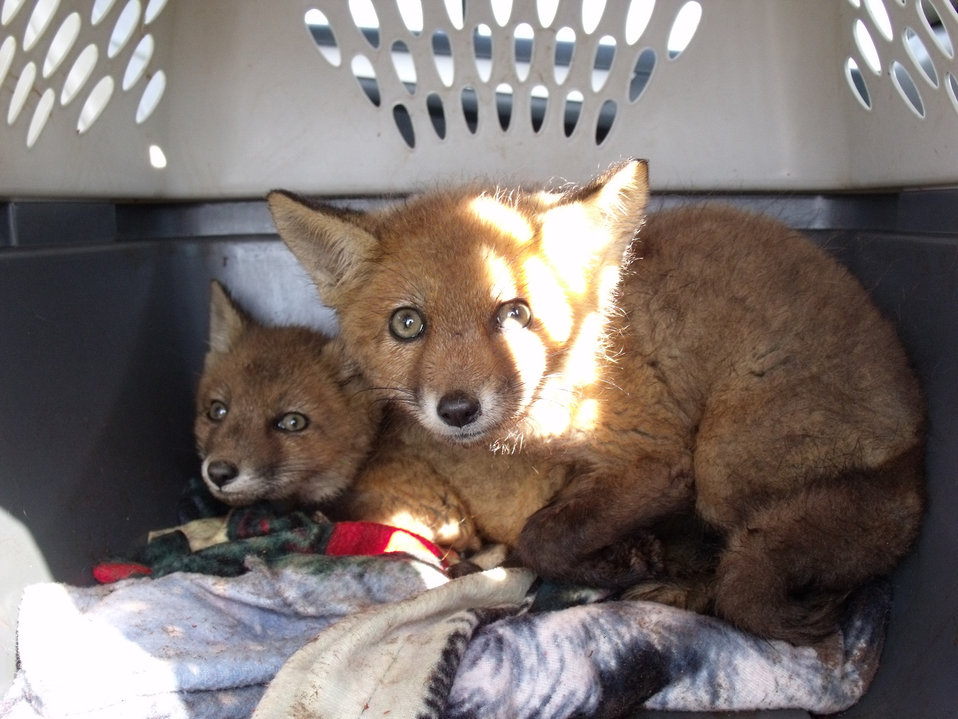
BASH

Two red foxes caught in May 2011 at Dover Air Force Base, Del., by Melody Henderson, a bird/wildlife aircraft strike hazard ecologist and wildlife manager, sit in a cage before being sent to a rehabilitator June 17, 2011. The rehabilitator will feed and raise the foxes before releasing them into woods away from Dover AFB.